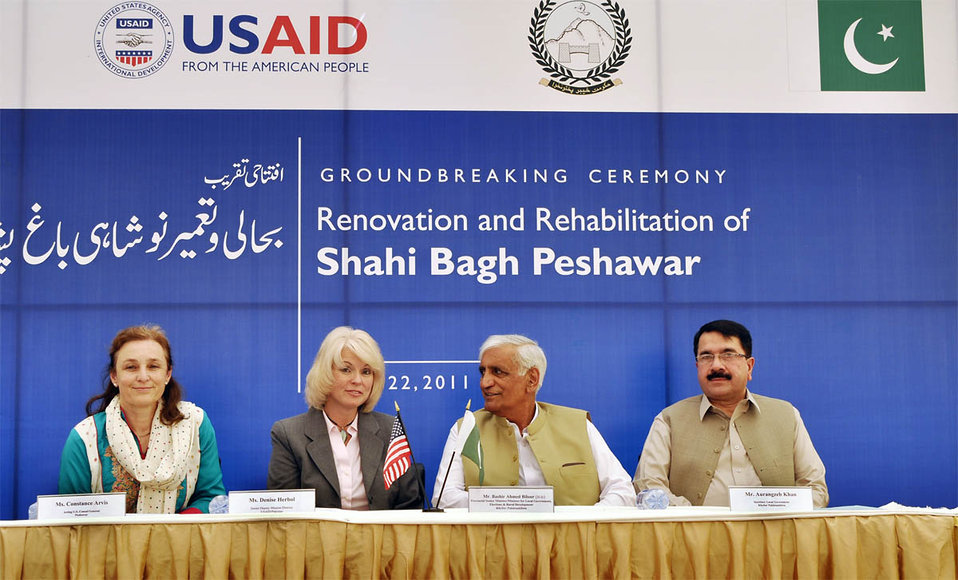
Shahi Bagh Park

Peshawar, April 22, 2011 - The United States, Khyber Pakhtunkhwa representatives launch the renovation of the historical Shahi Bagh in Peshawar. The United States, through the U.S. Agency for International Development (USAID), is providing Rs. 70 million to restore the park's original beauty. From left: Acting U.S. Consul General in Peshawar, Constance Arvis; USAID’s Pakistan Senior Deputy Mission Director, Denise Herbol; KPK’s Senior Provincial Minister and Minister for Local Governments, Elections and Rural Development, Bashir Ahmed Bilour; and KPK’s Secretary for Local Governments Aurangzeb Khan.